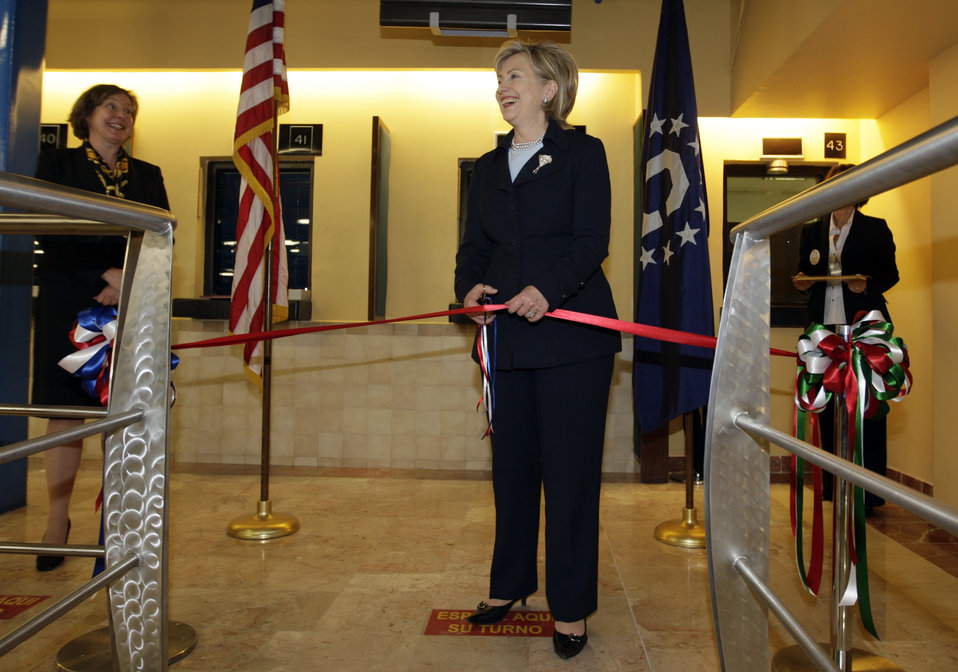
Secretary Clinton at U.S. Embassy in Mexico City

U.S. Secretary of State Hillary Rodham Clinton, accompanied by Charge d'Affaires Leslie A. Bassett, inaugurates newly constructed workspace to increase the visa processing capacity of the Consular Section of the U.S.Embassy in Mexico City. March 25, 2009, Mexico City.